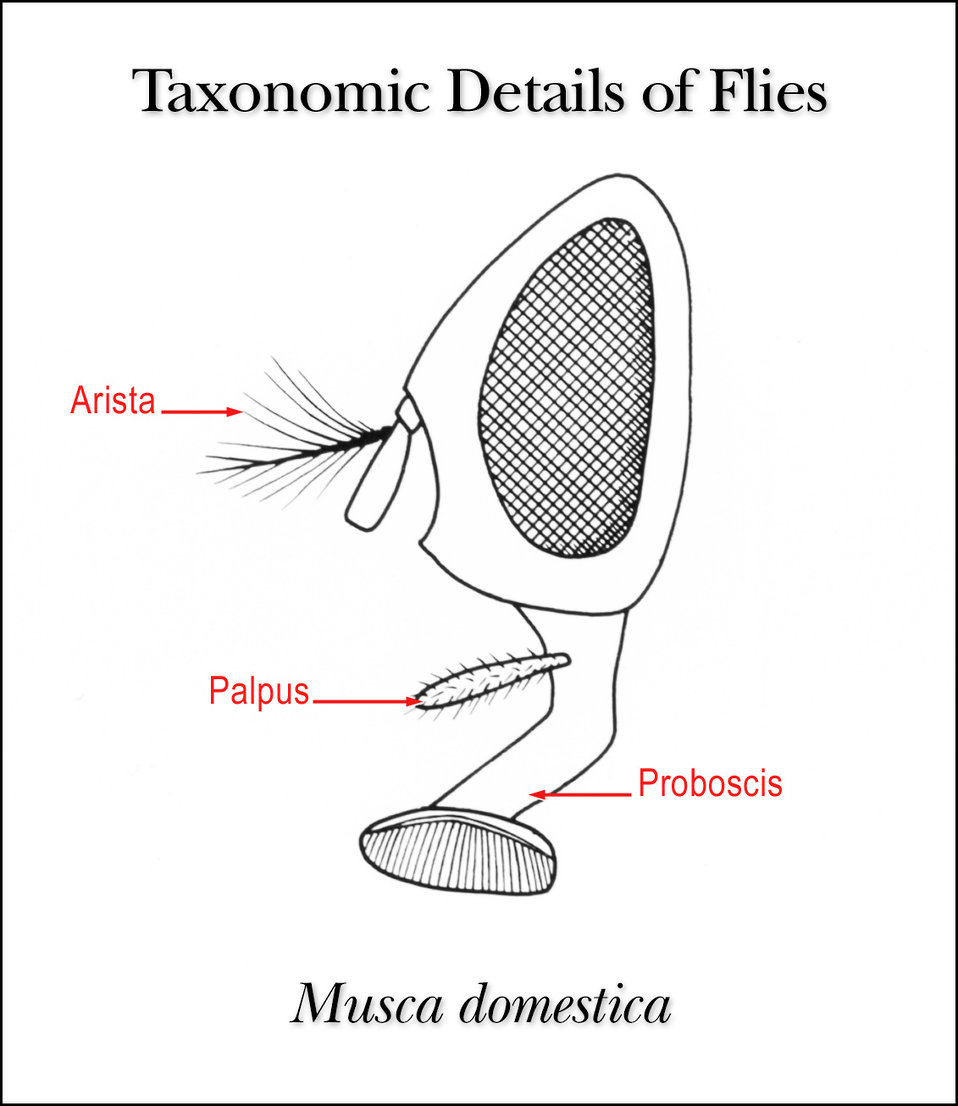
This illustration shows the taxonomic details in the head region of the common housefly, Musca domestica.